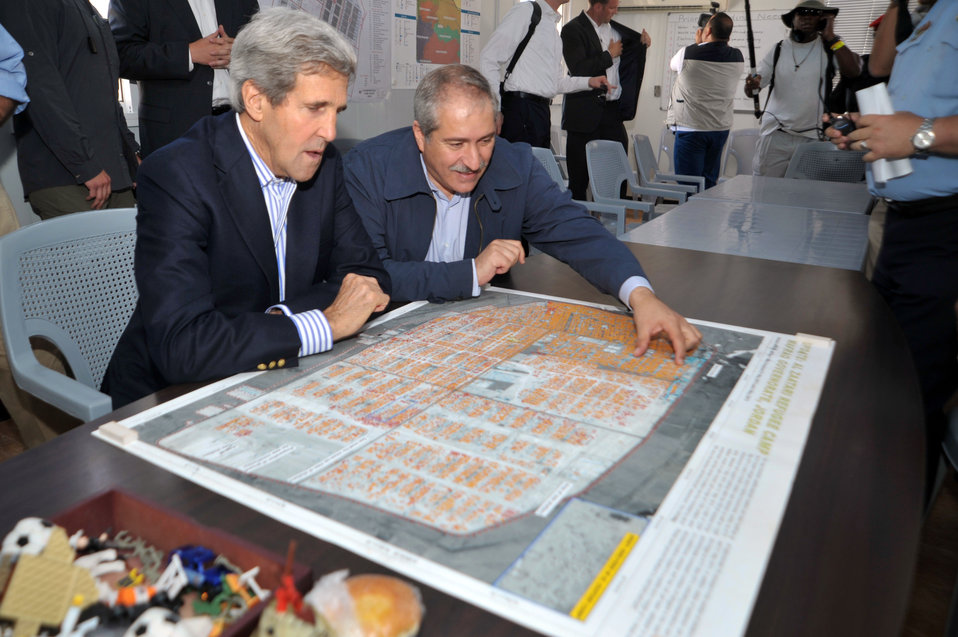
Jordanian Foreign Minister Judeh Shows Secretary Kerry a Map of the Za'atri Refugee Camp

Jordanian Foreign Minister Nasser Judeh shows U.S. Secretary of State John Kerry a map of the Za'atri camp for Syrian refugees as they visit the site on July 18, 2013.